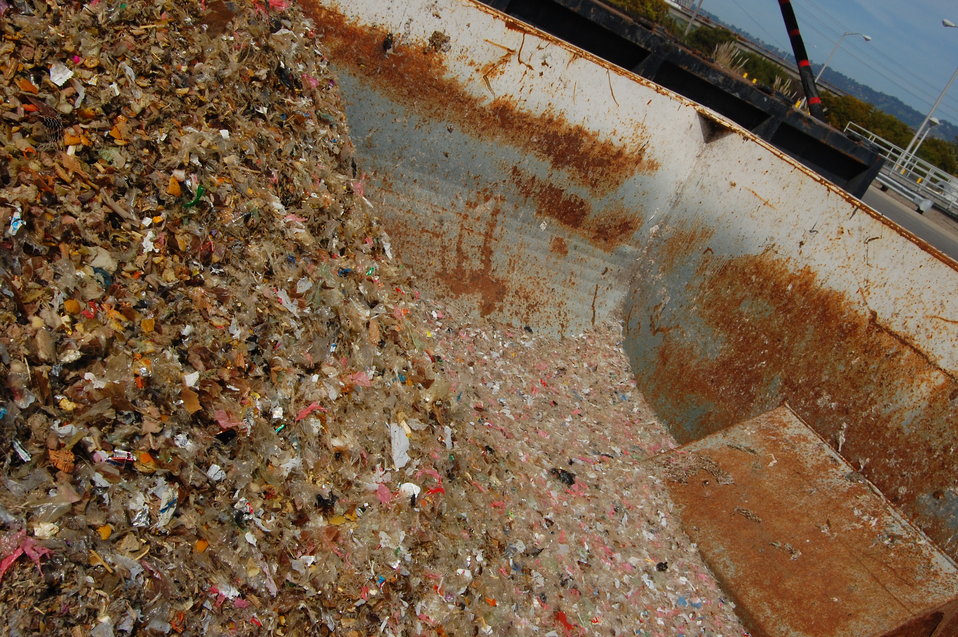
Processing Food Waste For Anaerobic Digestion- The Discards

In order to prepare the food waste anaerobic digestion, it must be processed into a homogenous pulp. The food is treated using EBMUD’s patented process which removes contaminants and grinds food to an applesauce-like consistency. The contaminants, generally plastic and foil, are discarded.